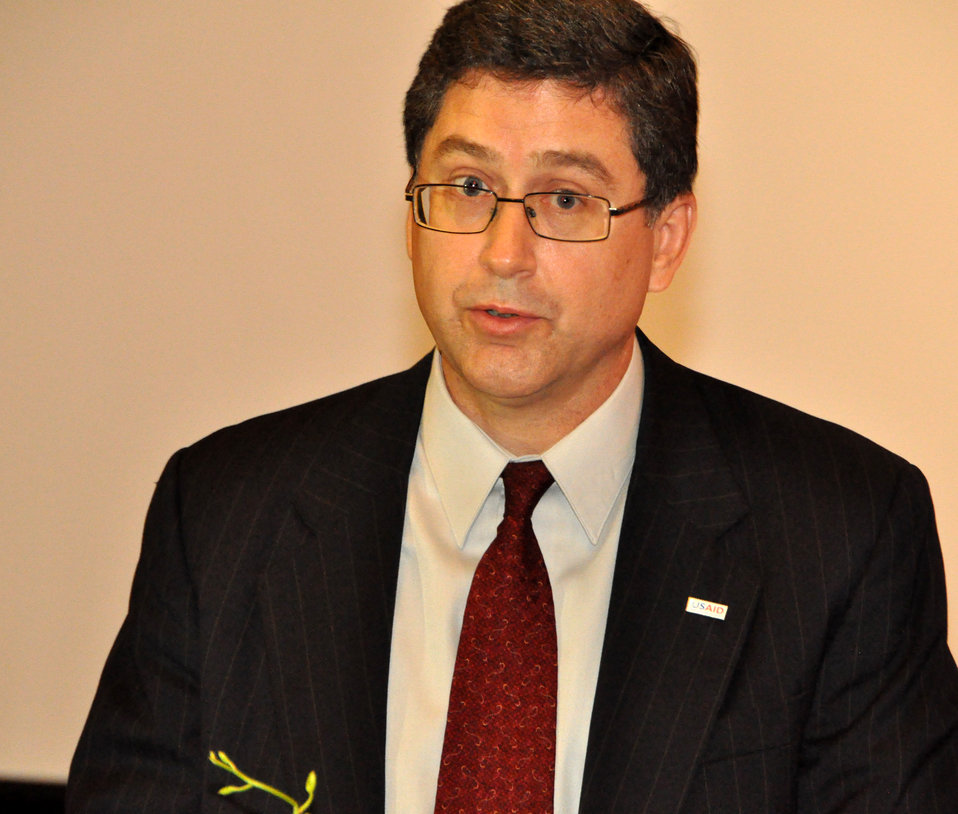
Microfinance Plan for People at Risk or Affected by HIV Found Sustainable

Jonathan Ross, USAID/Vietnam Office of Health Director, speaks at a seminar on June 14, 2012. Photo: @USAIDVietnam

USAID supported a pilot model for microfinance, including credit, savings and insurance, for people living with or affected by HIV or those at high risk of becoming infected. After one year, the model has been found to be successful, replicable, and sustainable.